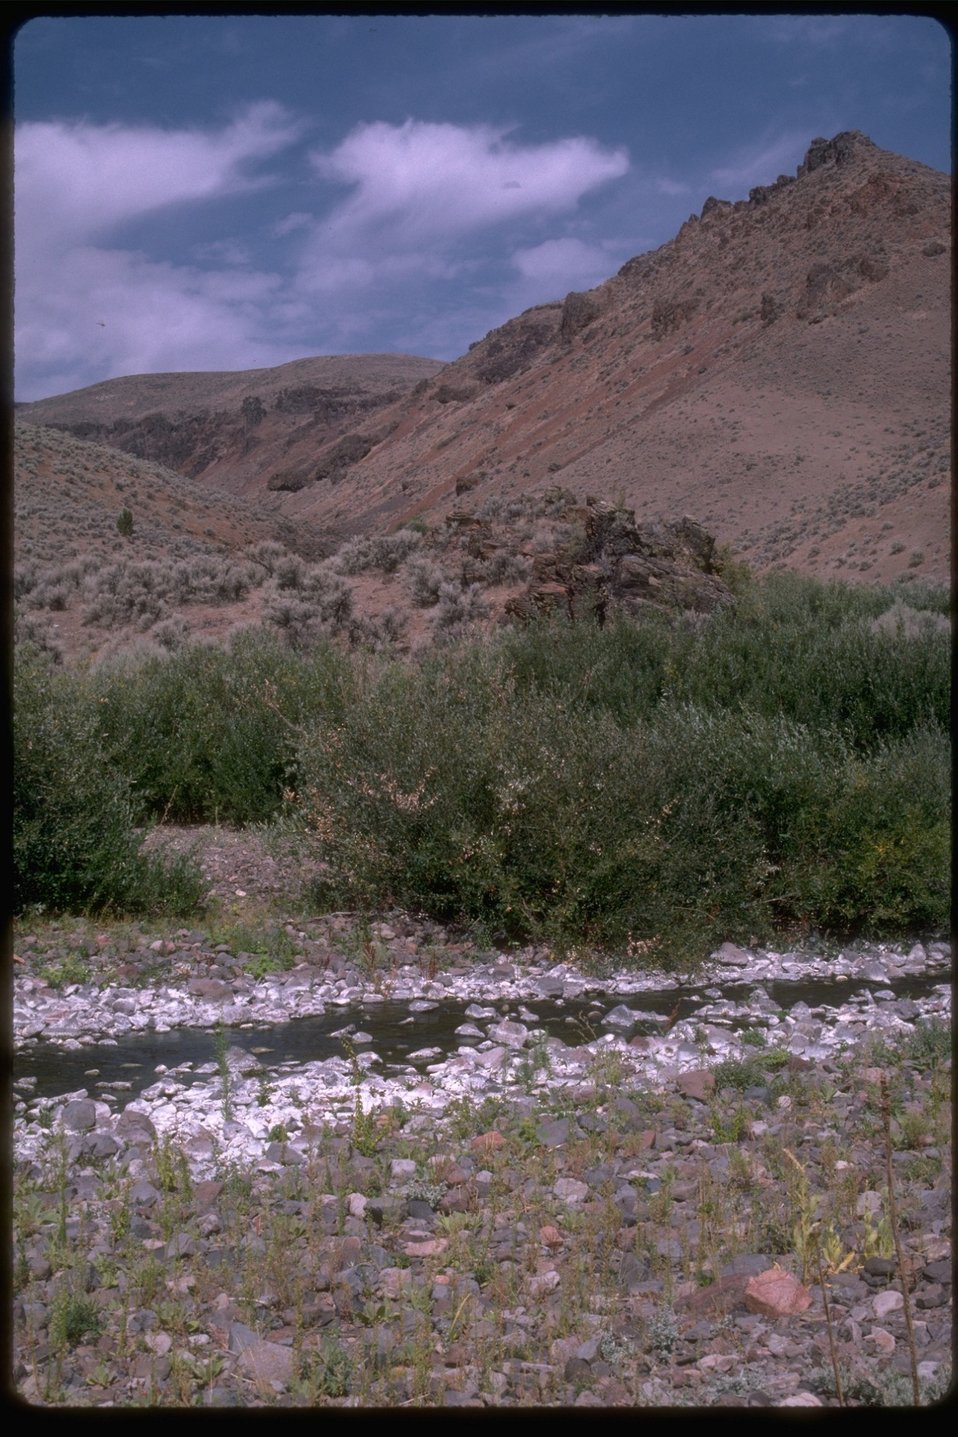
The mouth of the Wildcat River in the Camp Creek Wilderness Study Area. OR 3-31